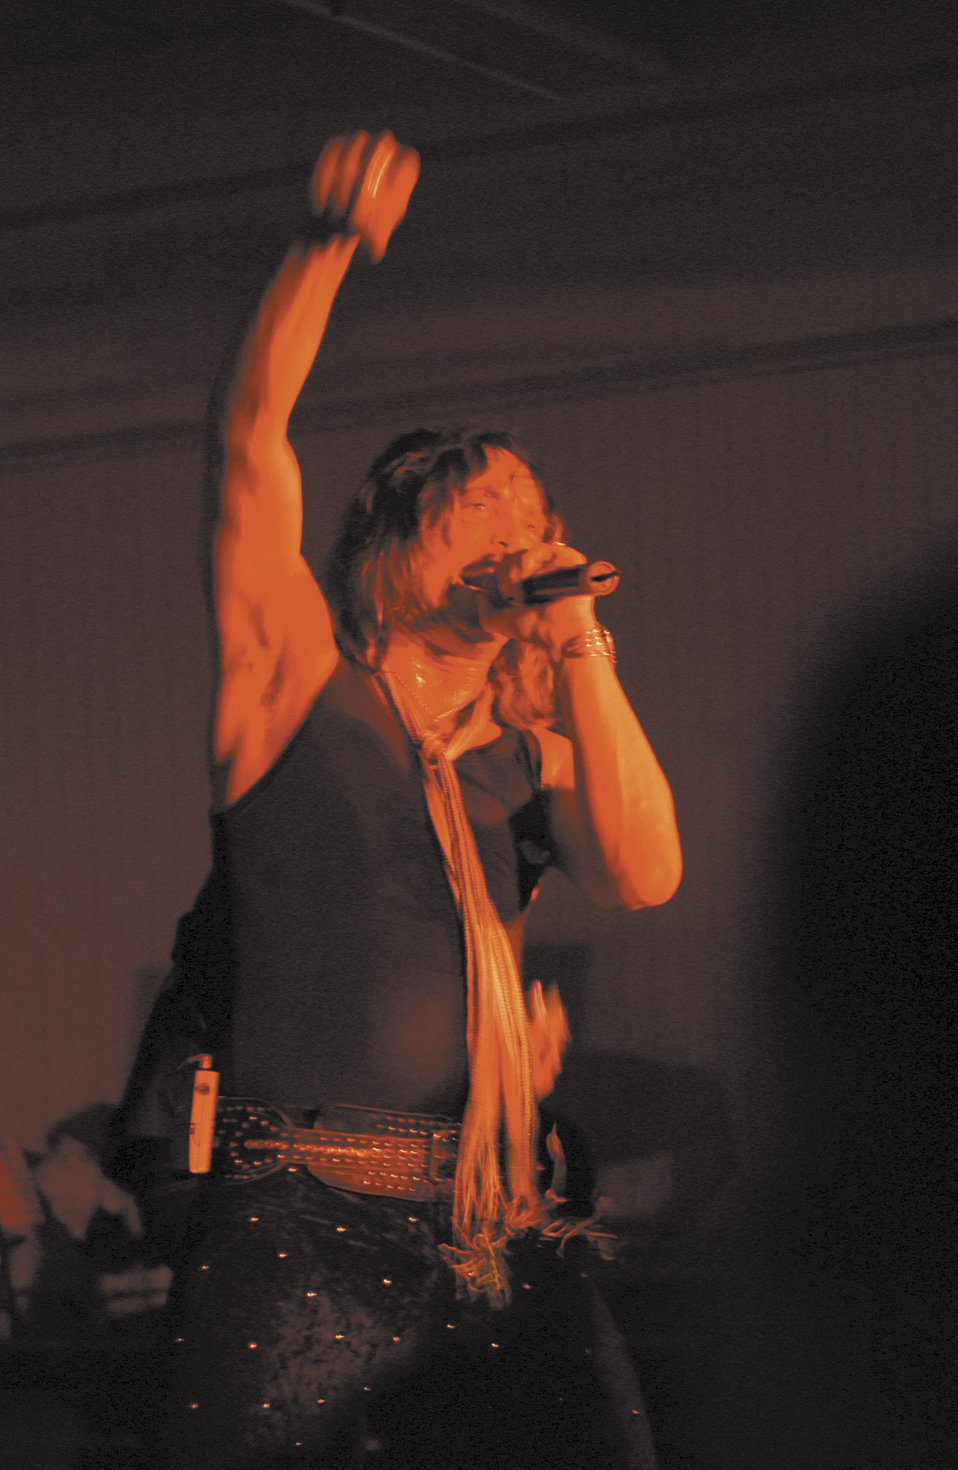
'Metal mayhem' returns to Kunsan

KUNSAN AIR BASE, South Korea -- Kevin DuBrow, frontman for heavy metal band Quiet Riot, energizes the crowd here May 17 during the evening's show. Quiet Riot returned for the first time since 2002 along with other 1980s metal giant Skid Row.